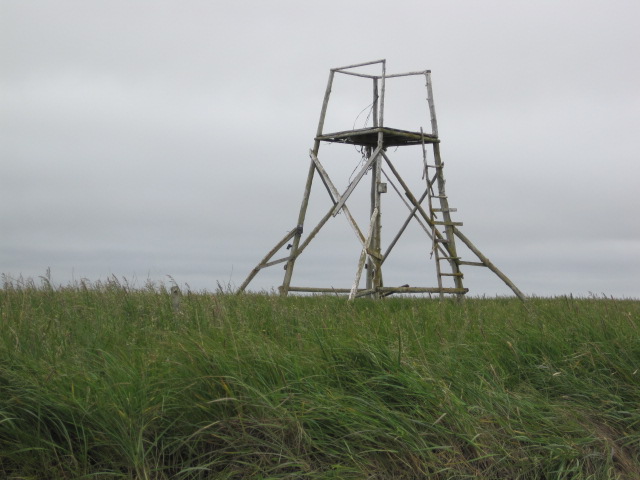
Towers

These towers are great for observing birds.

USFWS Yukon Delta NWR